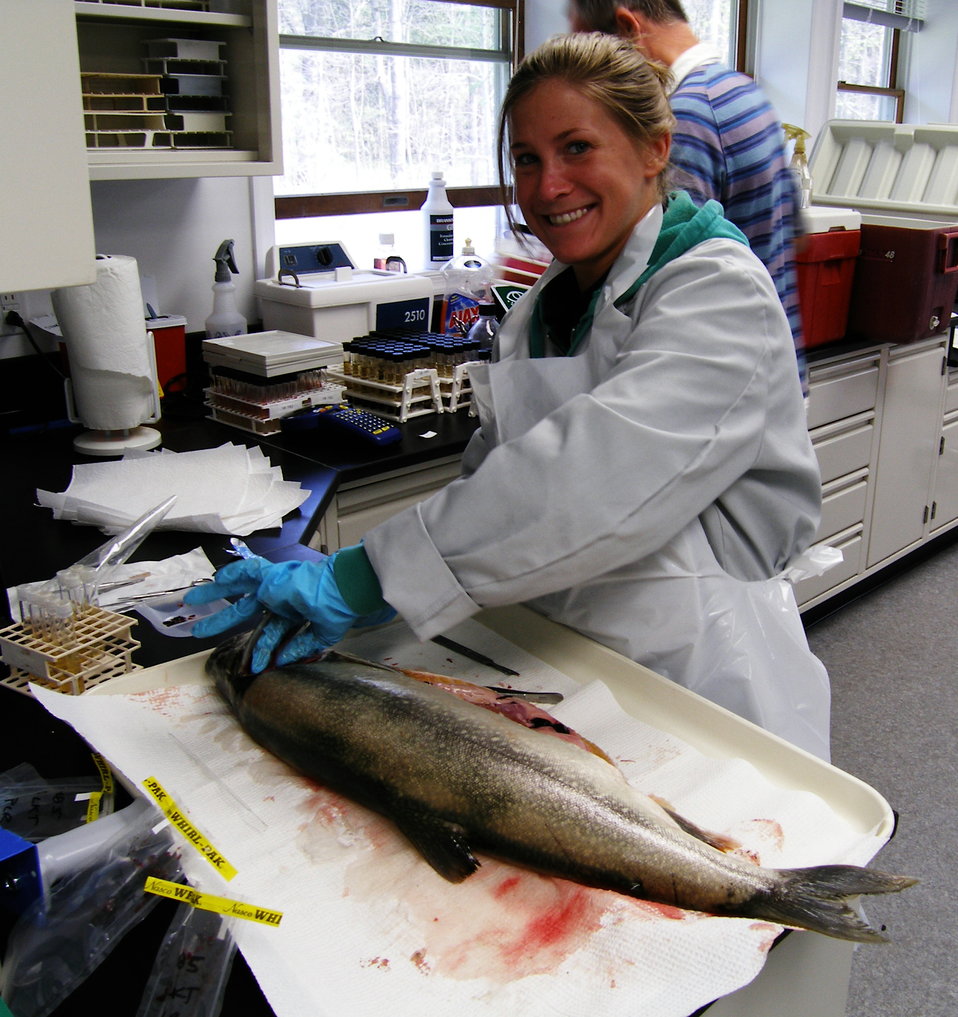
Necropsy

An intern performs a necropsy.